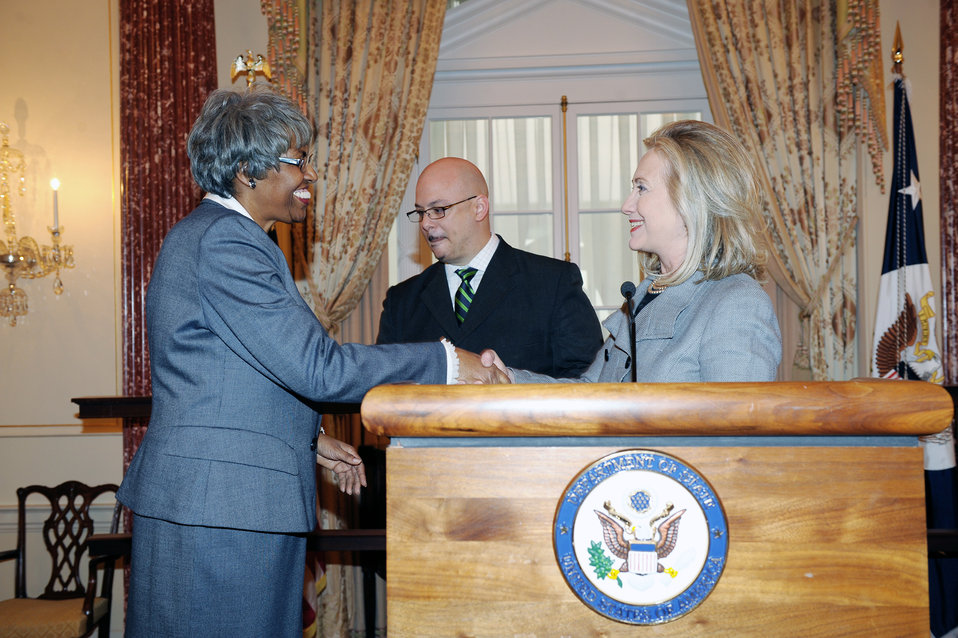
Secretary Clinton Holds a Swearing-In Ceremony for Joyce Barr as Assistant Secretary

U.S. Secretary of State Hillary Rodham Clinton holds a swearing-in ceremony for Joyce Barr as Assistant Secretary of State for Administration at the U.S. Department of State in Washington, D.C., on February 8, 2012.